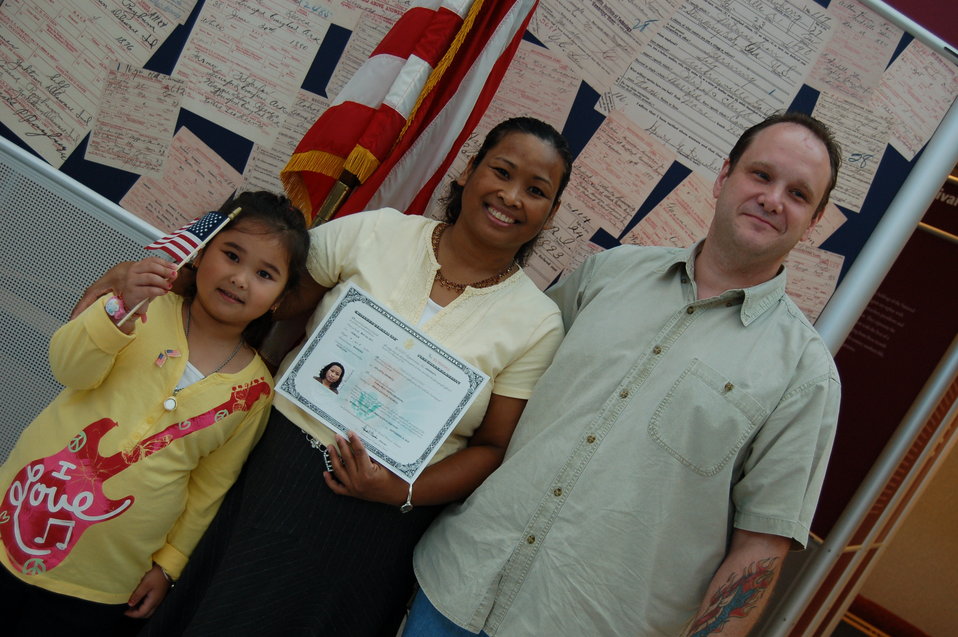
New Citizens